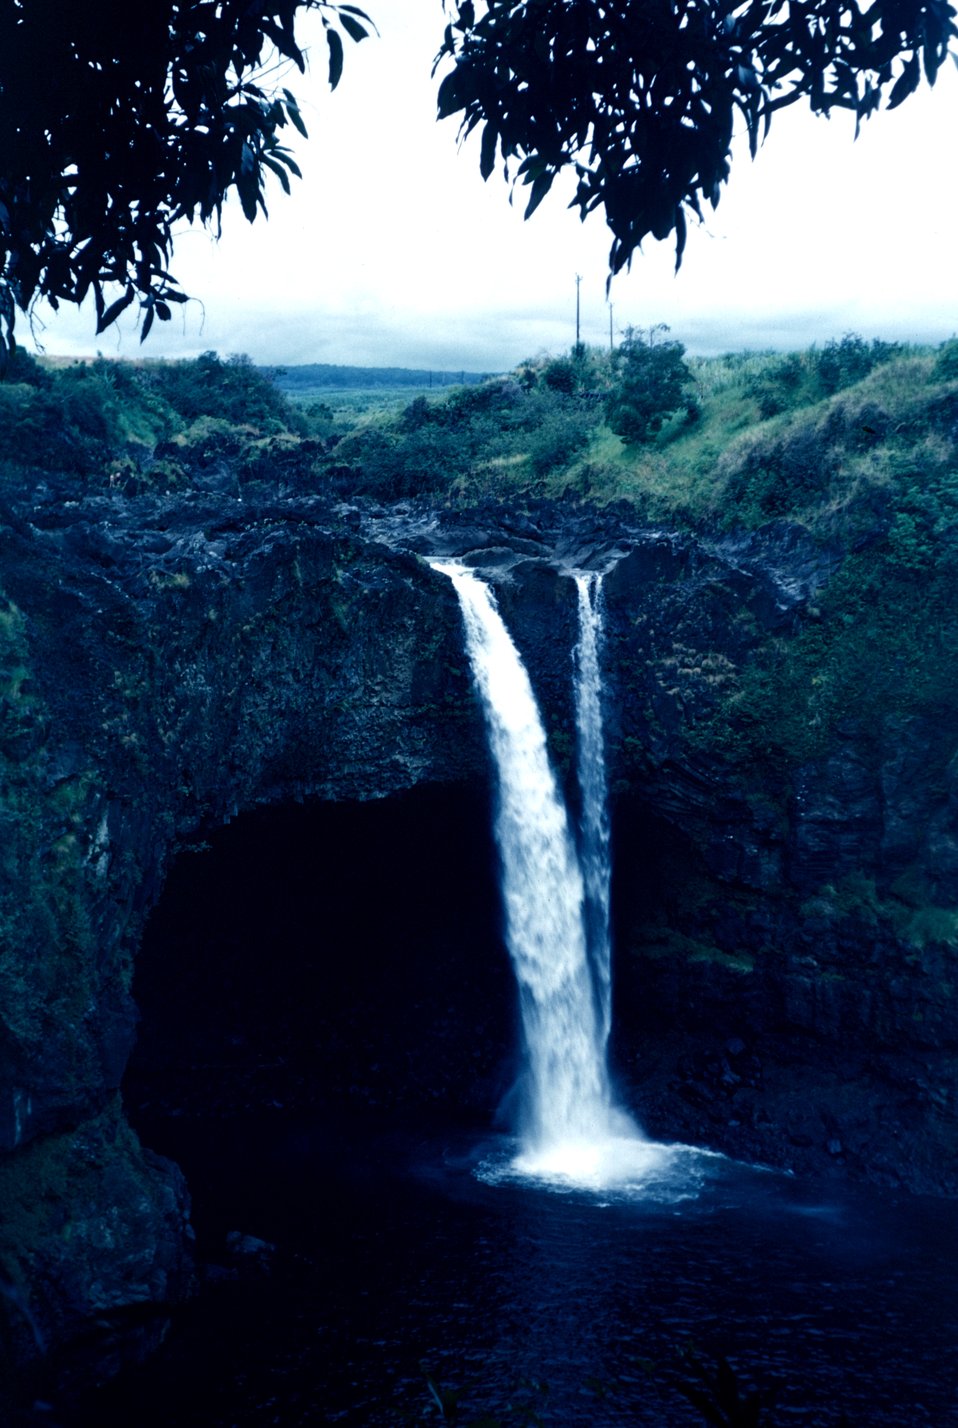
A Hawaiian waterfall.